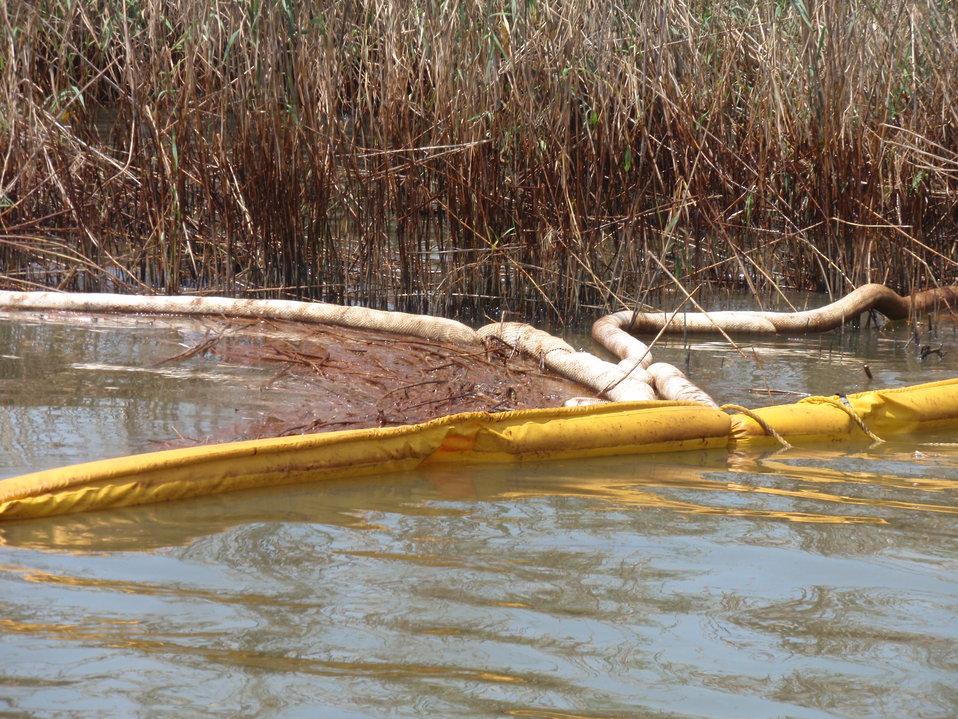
Different types of oil boom at work

The white oil boom acts to absorb oil from the surface of the water, while the yellow works to contain or prevent it from passing though into sensitive areas.